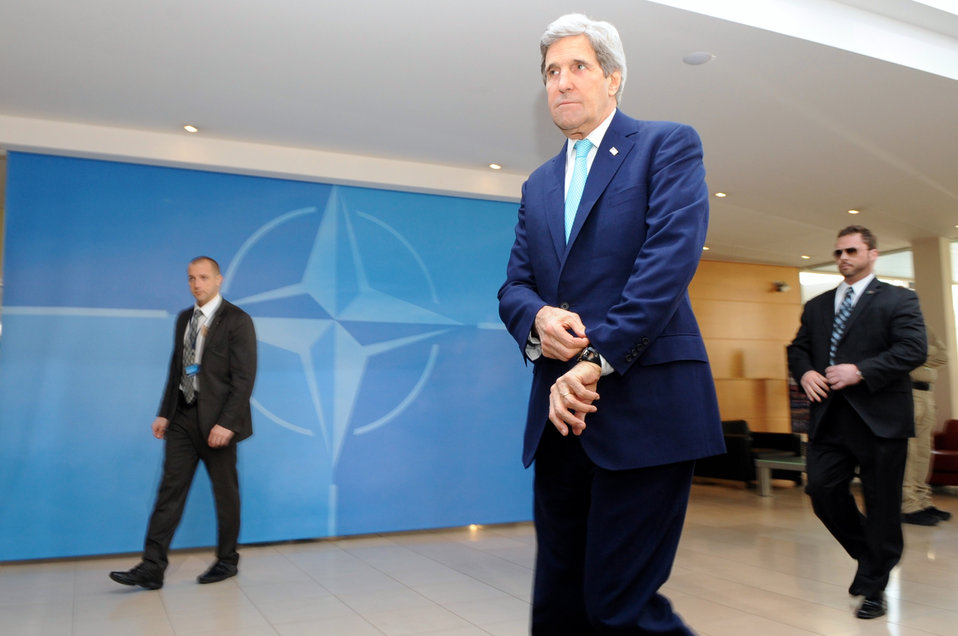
Secretary Kerry Arrives at NATO Headquarters for NATO Ministerial Meetings

U.S. Secretary of State John Kerry arrives at NATO Headquarters in Brussels, Belgium, for ministerial meetings on April 1, 2014.